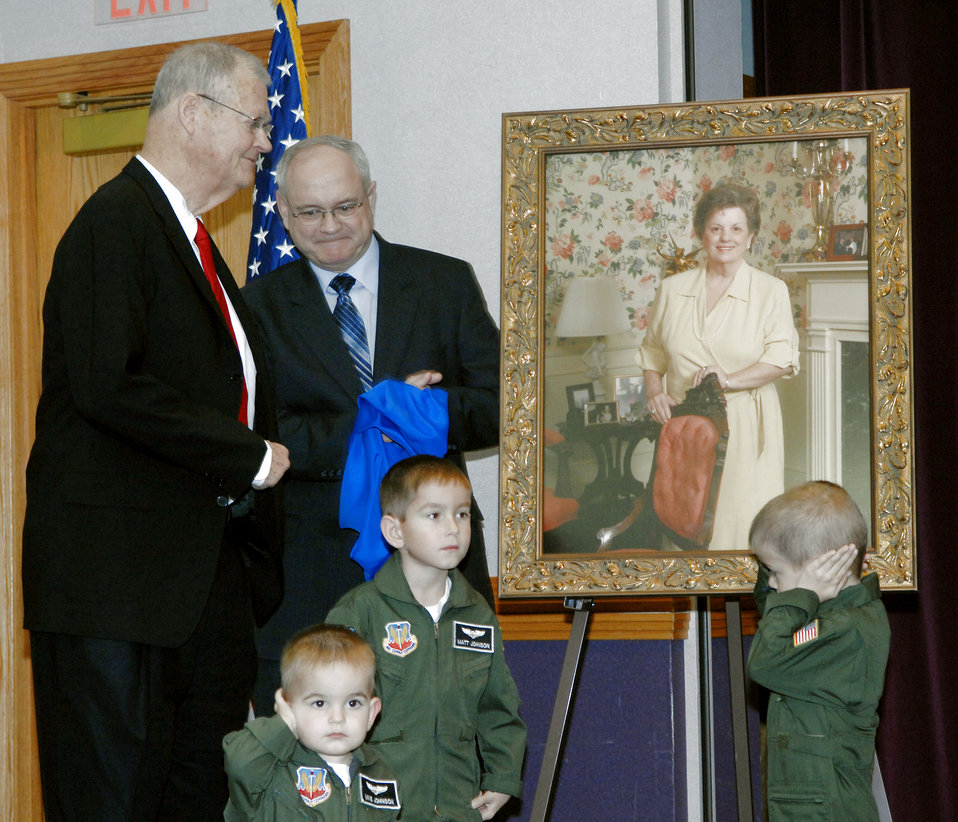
Whiteman dedicates Child Development Center

Rep. Ike Skelton (left), Dale Buckingham, Matthew Johnson, 5; Nathan Johnson, 4; and Michael Johnson, 1, unveil a painting of Susie Skelton during a Child Development Center dedication ceremony March 15 at Whiteman Air Force Base, Mo. Completed in 2007, the center was officially named the Susie Skelton Child Development Center in honor of her life, service and leadership to many civic and family organizations, for her dedication to the men and women in uniform, and in particular, for the advancement of children. The painting of Mrs. Skelton was commissioned by the Whiteman AFB Community Council and is now on display in the CDC foyer. Mr. Buckingham is the president of the Whiteman AFB Community Council. The children are sons of Lt. Col. Craig Johnson, the 509th Civil Engineer Squadron commander.